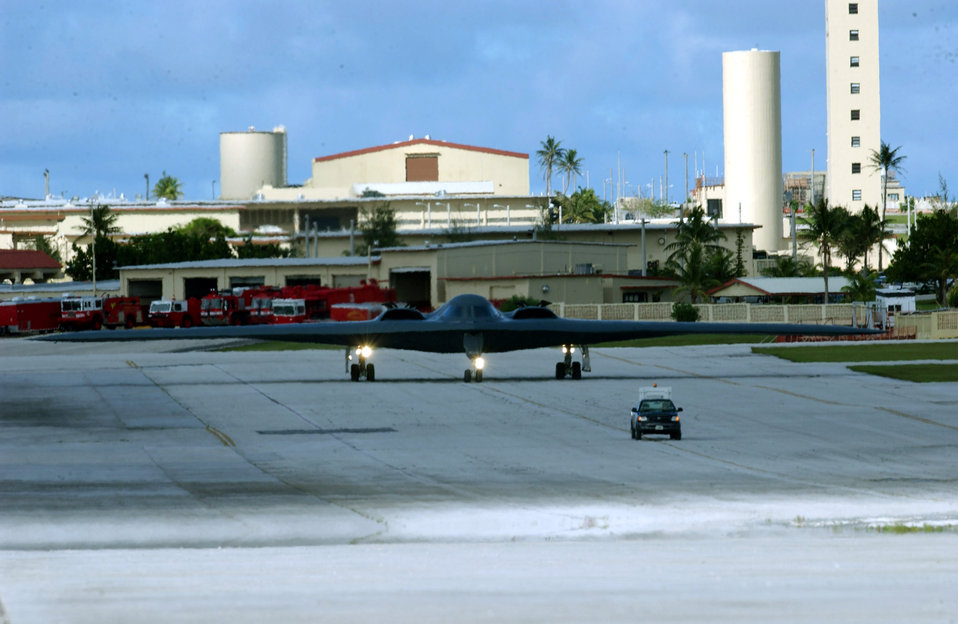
A spirit landing

ANDERSEN AIR FORCE BASE, Guam (AFPN) -- A B-2 Spirit taxis onto the flightline here recently. The bomber is supporting a Coronet Bugle 49 exercise and is deployed from Whiteman Air Force Base, Mo. The exercise is part of Air Combat Command's ongoing global power missions. The missions enable aircrews to train for long flights from United States to overseas locations.